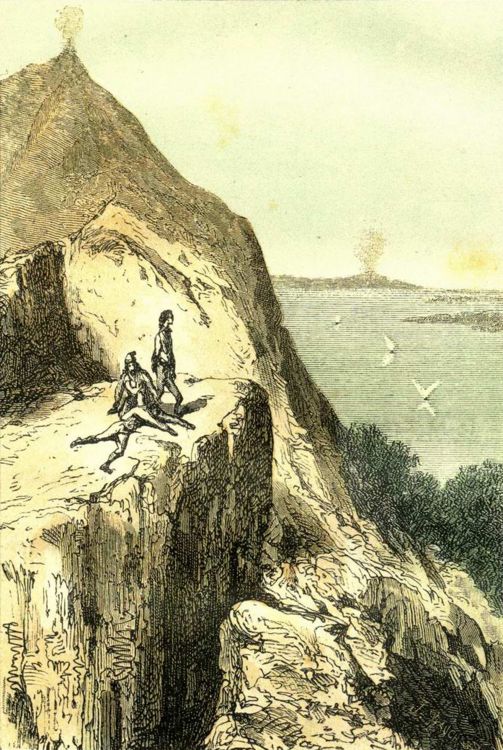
An ilustration from the novel 'Journey to the Center of the Earth' by Jules Verne painted by Édouard Riou. Polski: Ilustracja powieści Juliusza Verne'a 'Wyprawa do wnętrza Ziemi' autorstwa Édouarda Riou. Français : 'Voyage au centre de la Terre', Édouard Riou. Français : Du sommet du Stromboli.